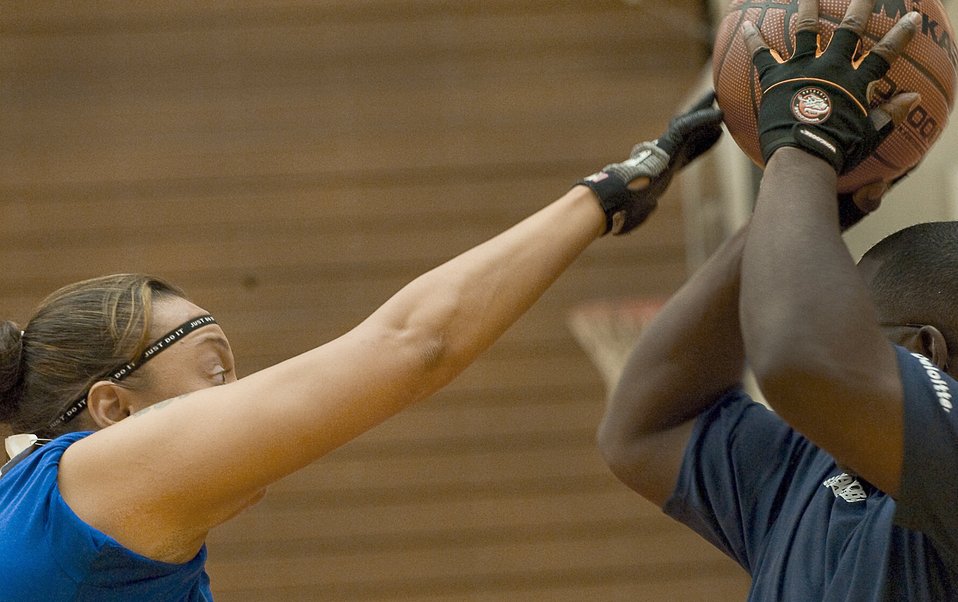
Team Air Force wins game

A team Air Force player blocks a Navy opponent during the Warrior Games bronze medal match against the Air Force May 12, 2010, at the Olympic Training Center in Colorado Springs, Colo. The Air Force went on to win the game 13-10.